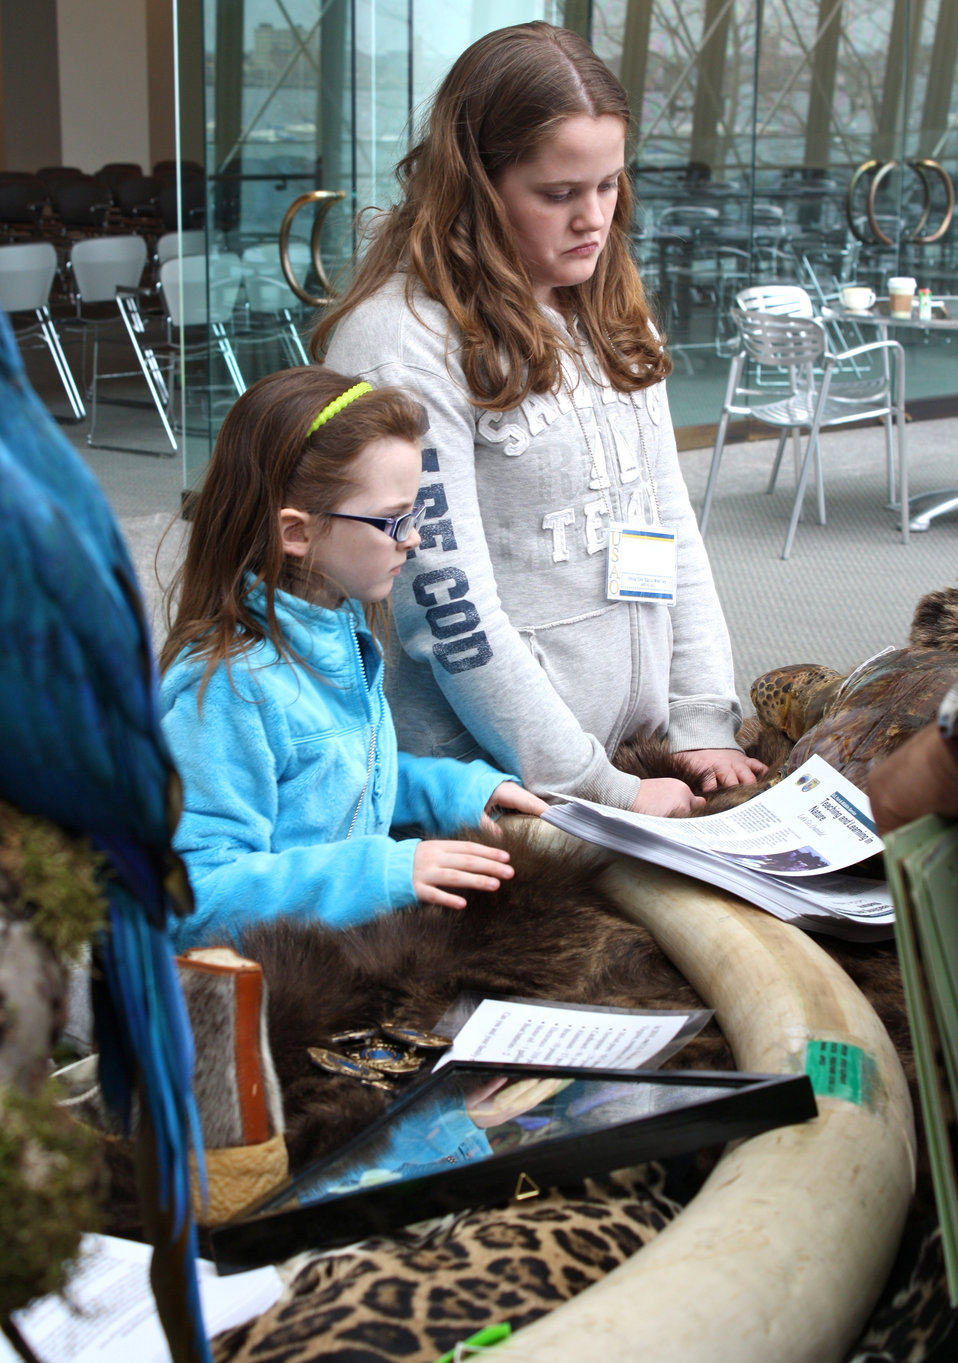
Girls and Elephant Tusk